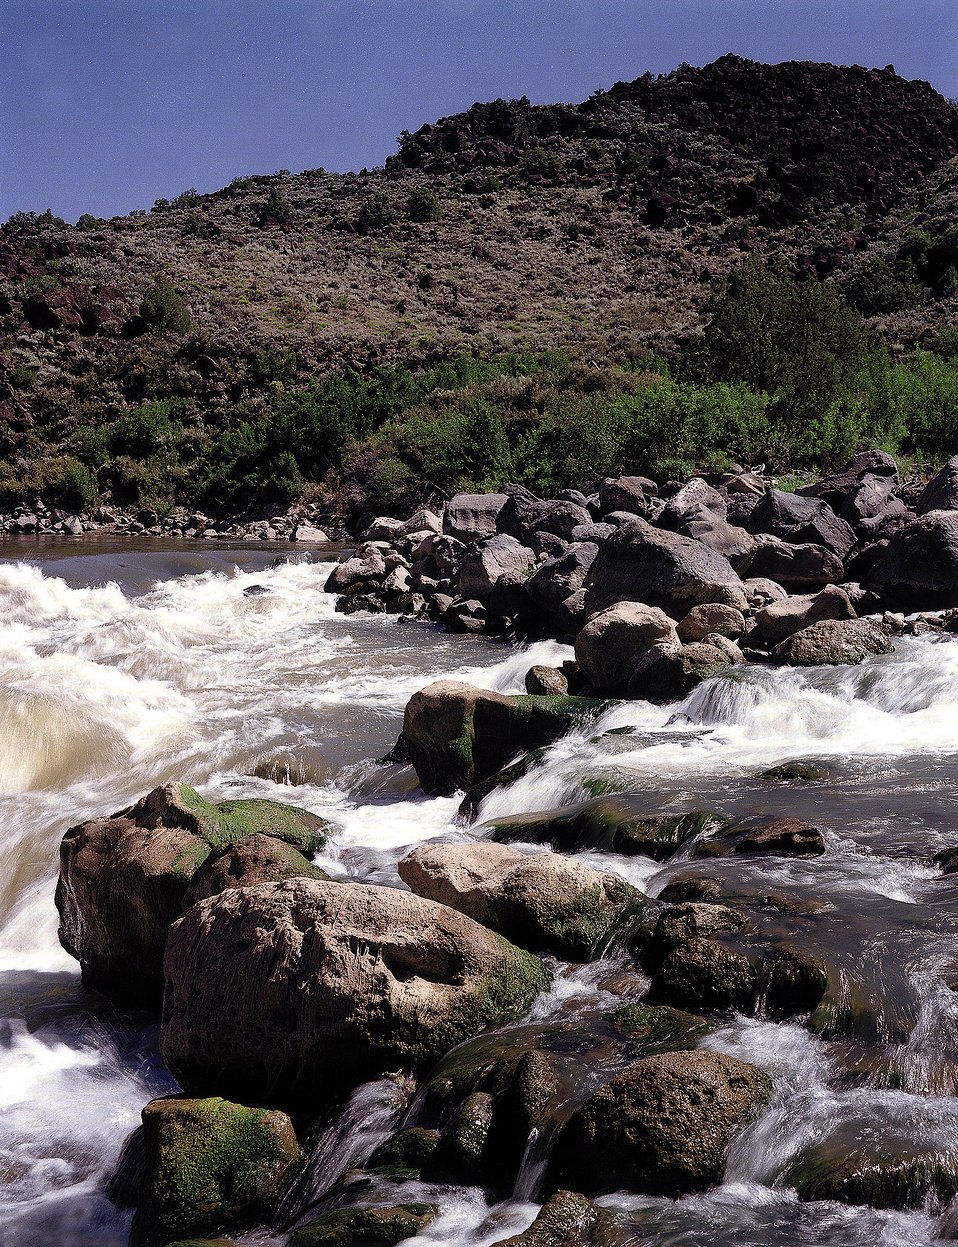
RUNNING BROOK AT BASE OF MOUNTAINS NEAR LOS ALAMOS NATIONAL LABORATORY.